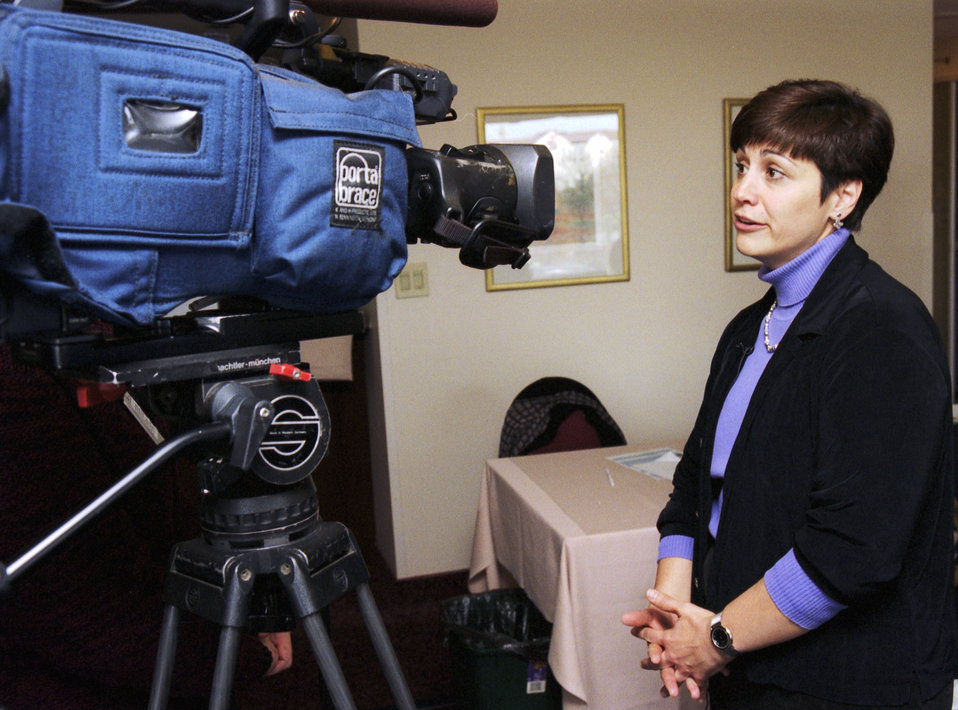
CDC Clinician, Joanne Cono, MD, is being interviewed by a television news team during the 2002 Smallpox Vaccinator Workshop.